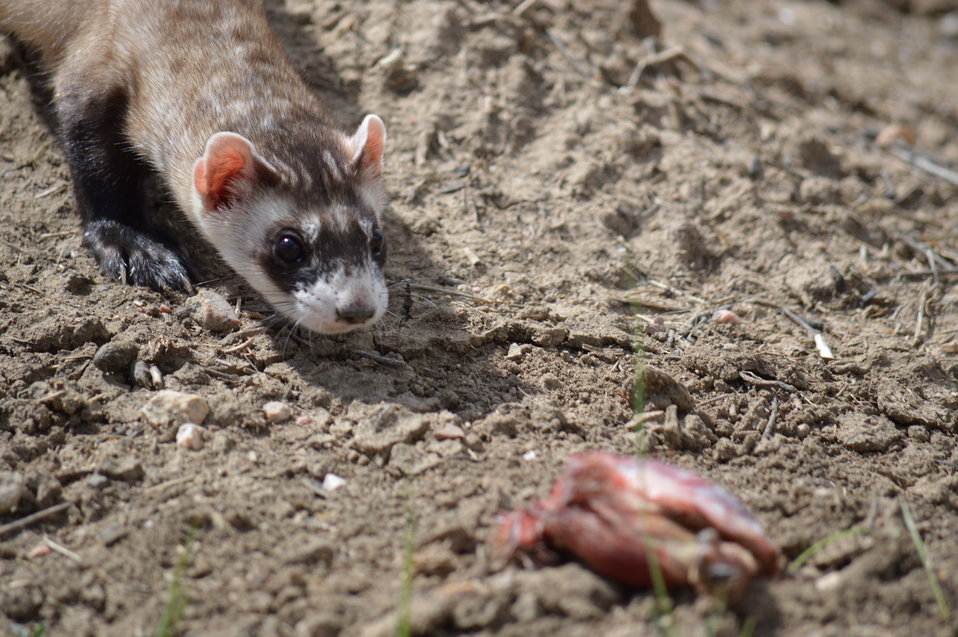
Interns visit the NBFFCC

In the summer of 2012, USFWS Region 6 interns visited the National Black-footed Ferret Conservation Center (NBFFCC) in Colorado to learn how the program reintroduces the endangered Black-footed ferret back into its native habitat.